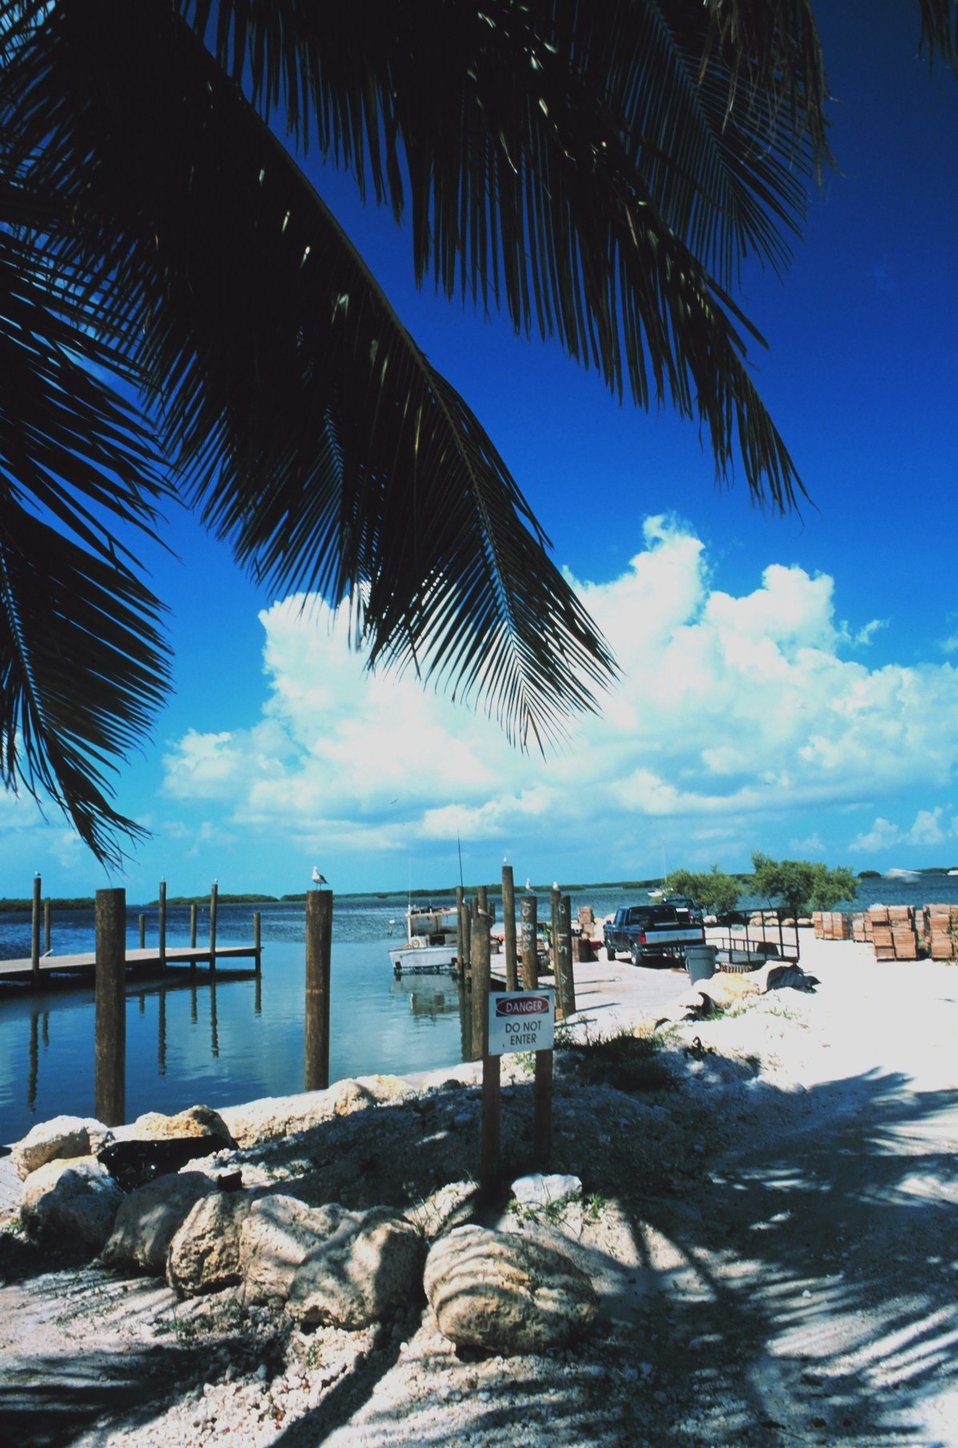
Fishing in paradise - the stone crab fishery at Islamorada